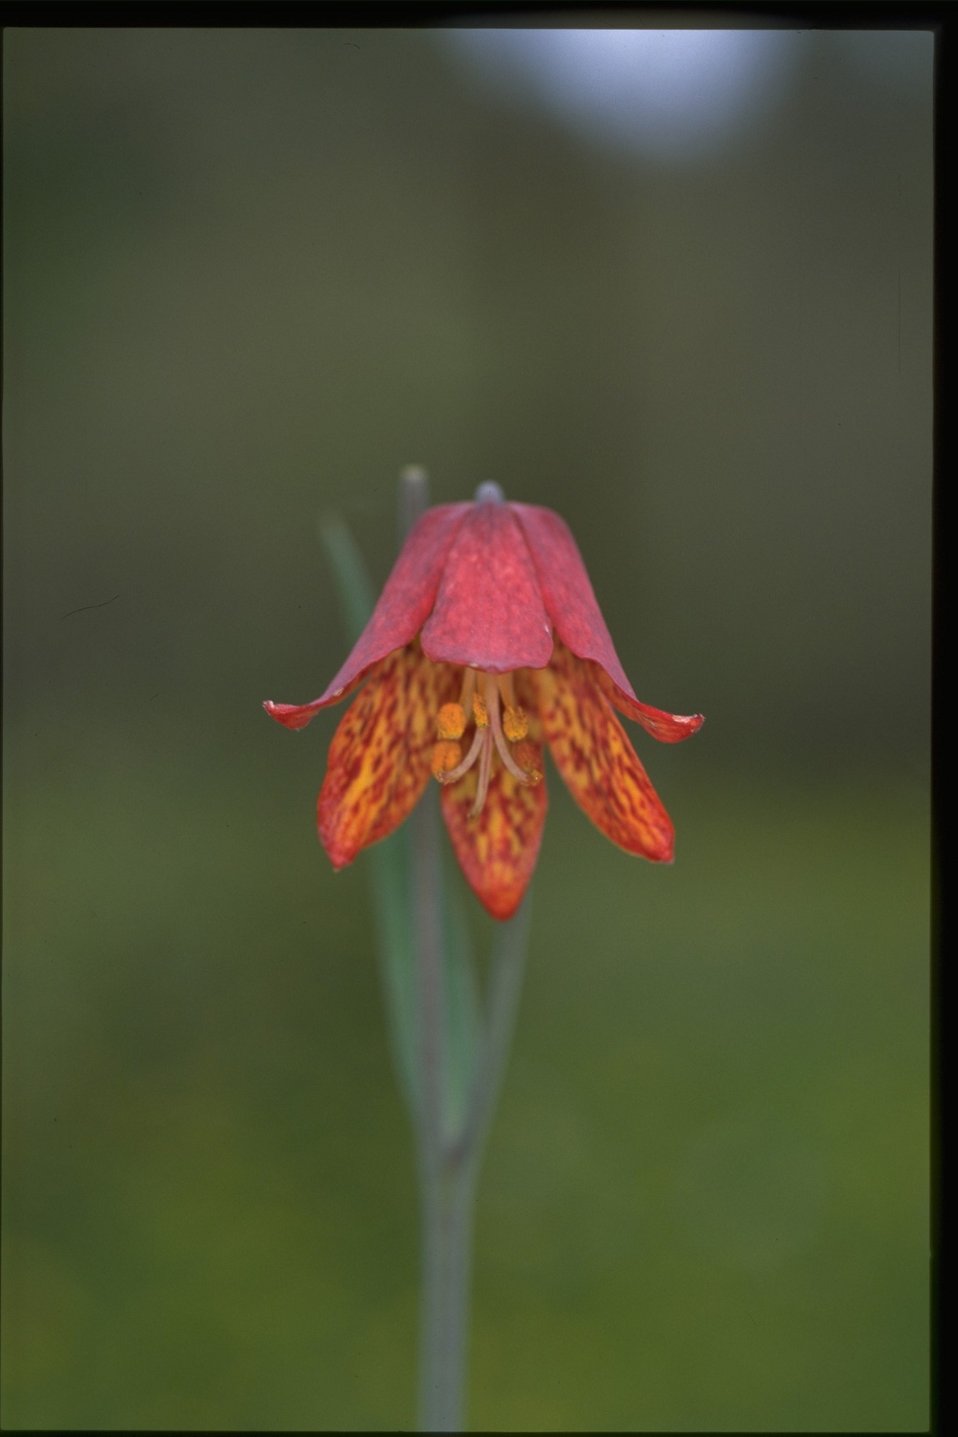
Closeup shot of Gentner's Fritillary, Fritillaria gentneri.